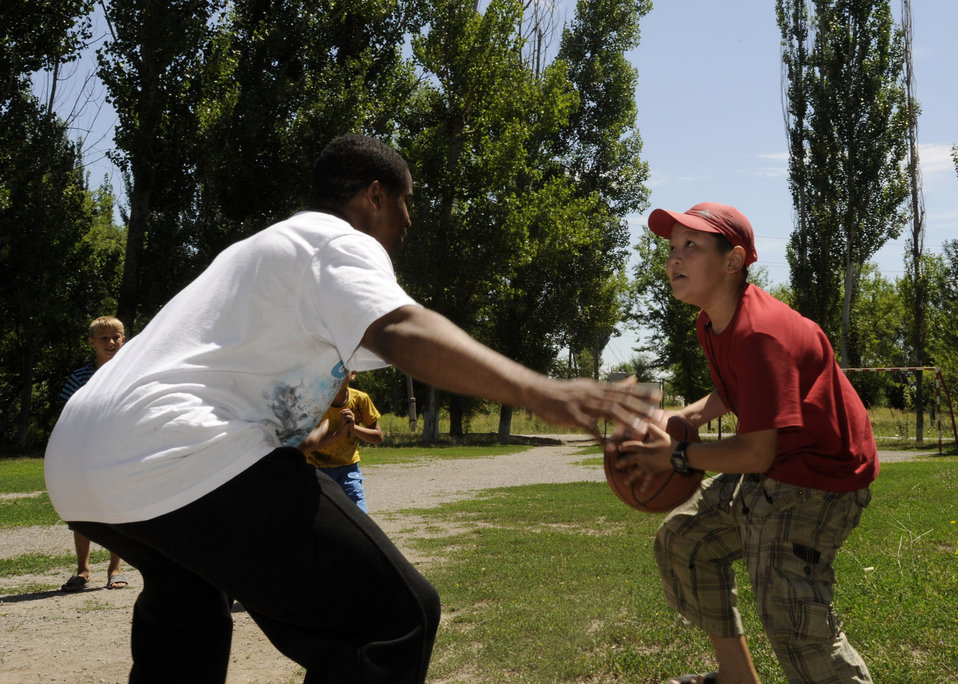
PA system to Kyrgyz school

Staff Sgt. Diamond Edwards tries to block the shot of a local child as the two play a game of basketball July 1, 2011, in Kyrgyzstan. After donating a public address system to the village, Airmen from the Transit Center at Manas 376th Expeditionary Communications Squadron played games of basketball, volleyball, American football and Frisbee with village children. Edwards is a communications project manager.